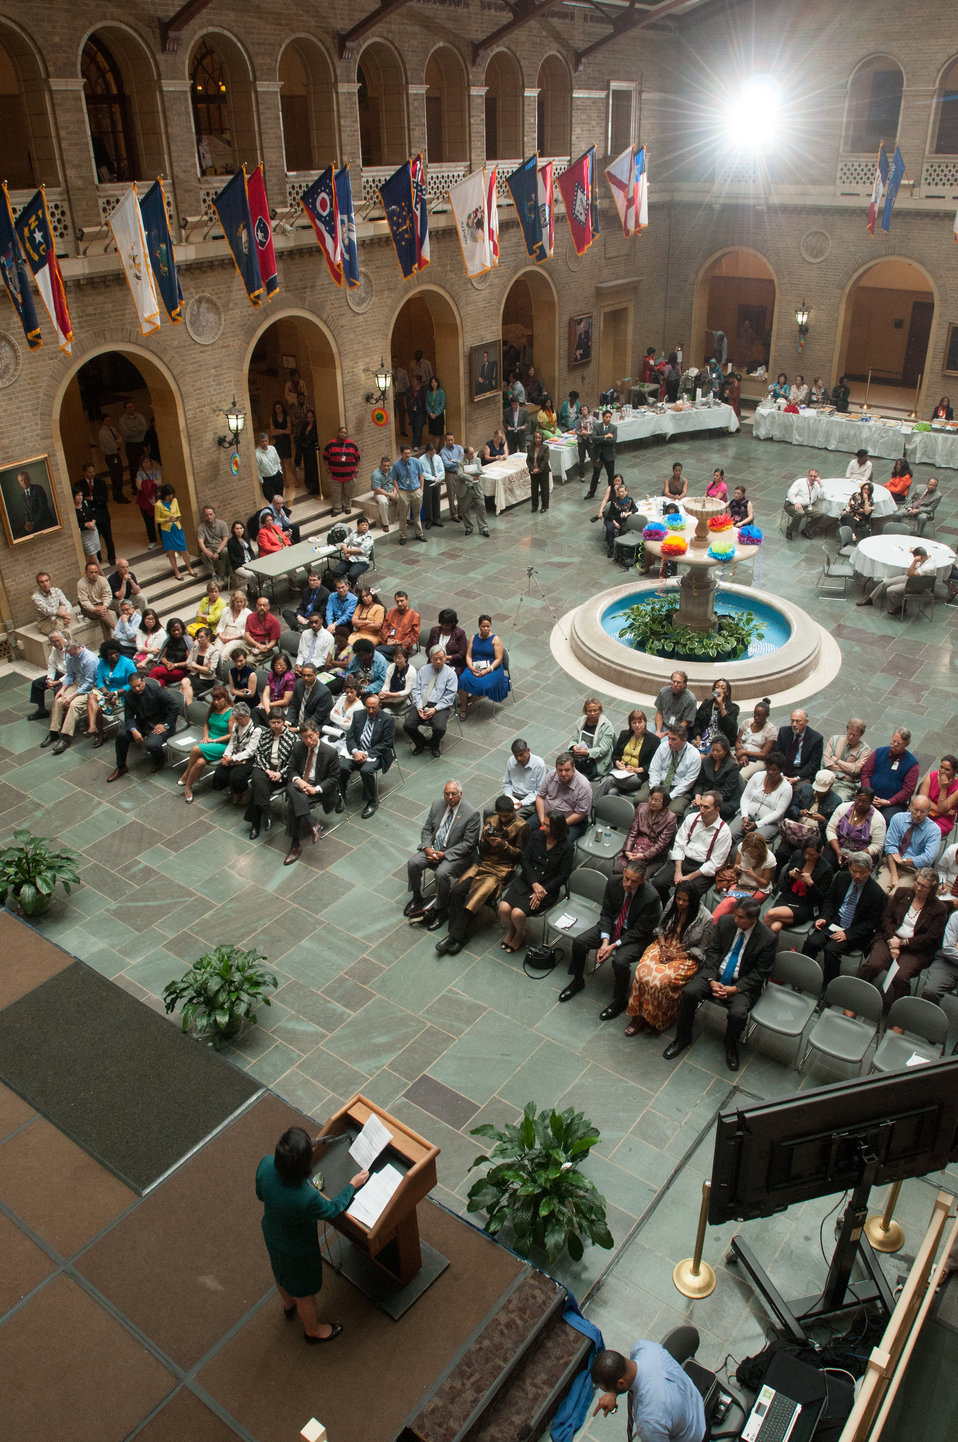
U.S. Representative Judy Chu (CA) speaks during the U.S. Department of Agriculture (USDA) Asian Pacific American Heritage Month Observance, at the USDA headquarters in Washington, D.C. on Thursday, May 23, 2013. This year’s theme is “Building leadership; Embracing the Cultural Values and Inclusions.”